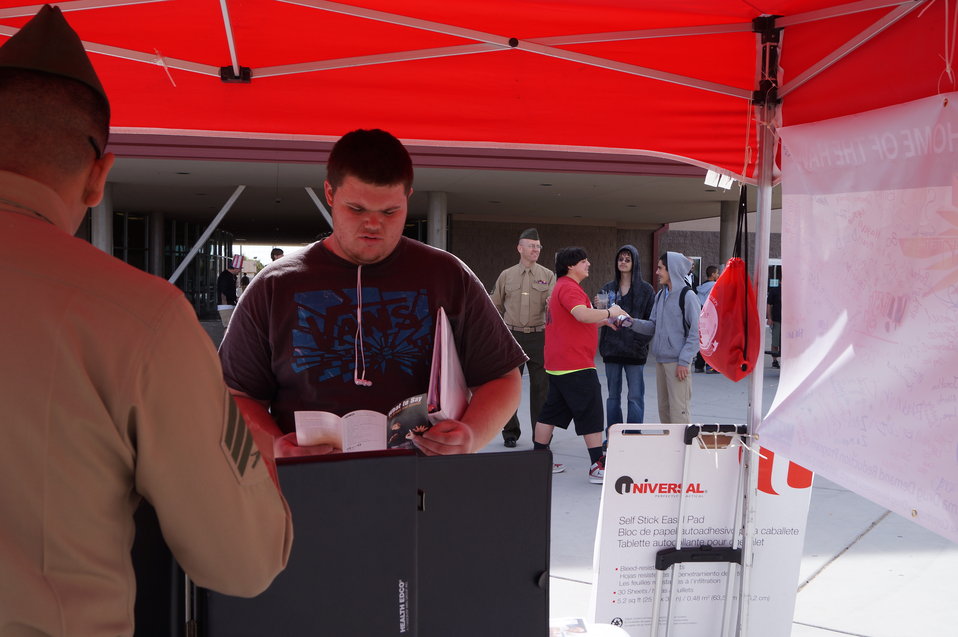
National Drug Facts Week - GILA RIDGE HS

The Drug Demand Reduction Program out of Yuma Arizona held numerous events at local schools to support NIDA's National Drug Facts Week, Jan. 27-Feb. 2 2014. Teens participated in drug awareness games, and helped to Shatter the Myths about teen substance abuse.